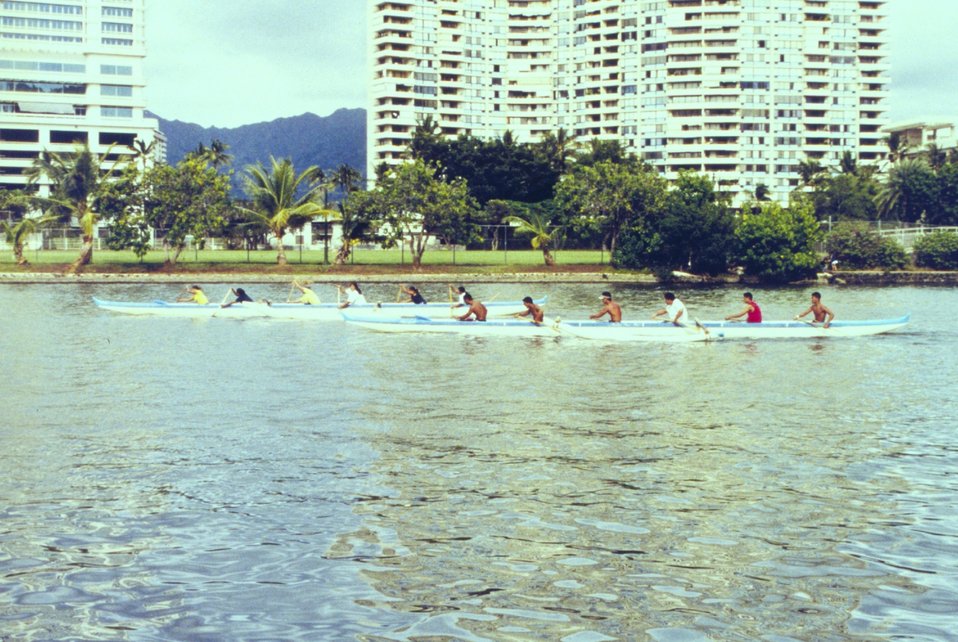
Practicing for outrigger races in the Ali Wai Canal near Waikiki Beach.